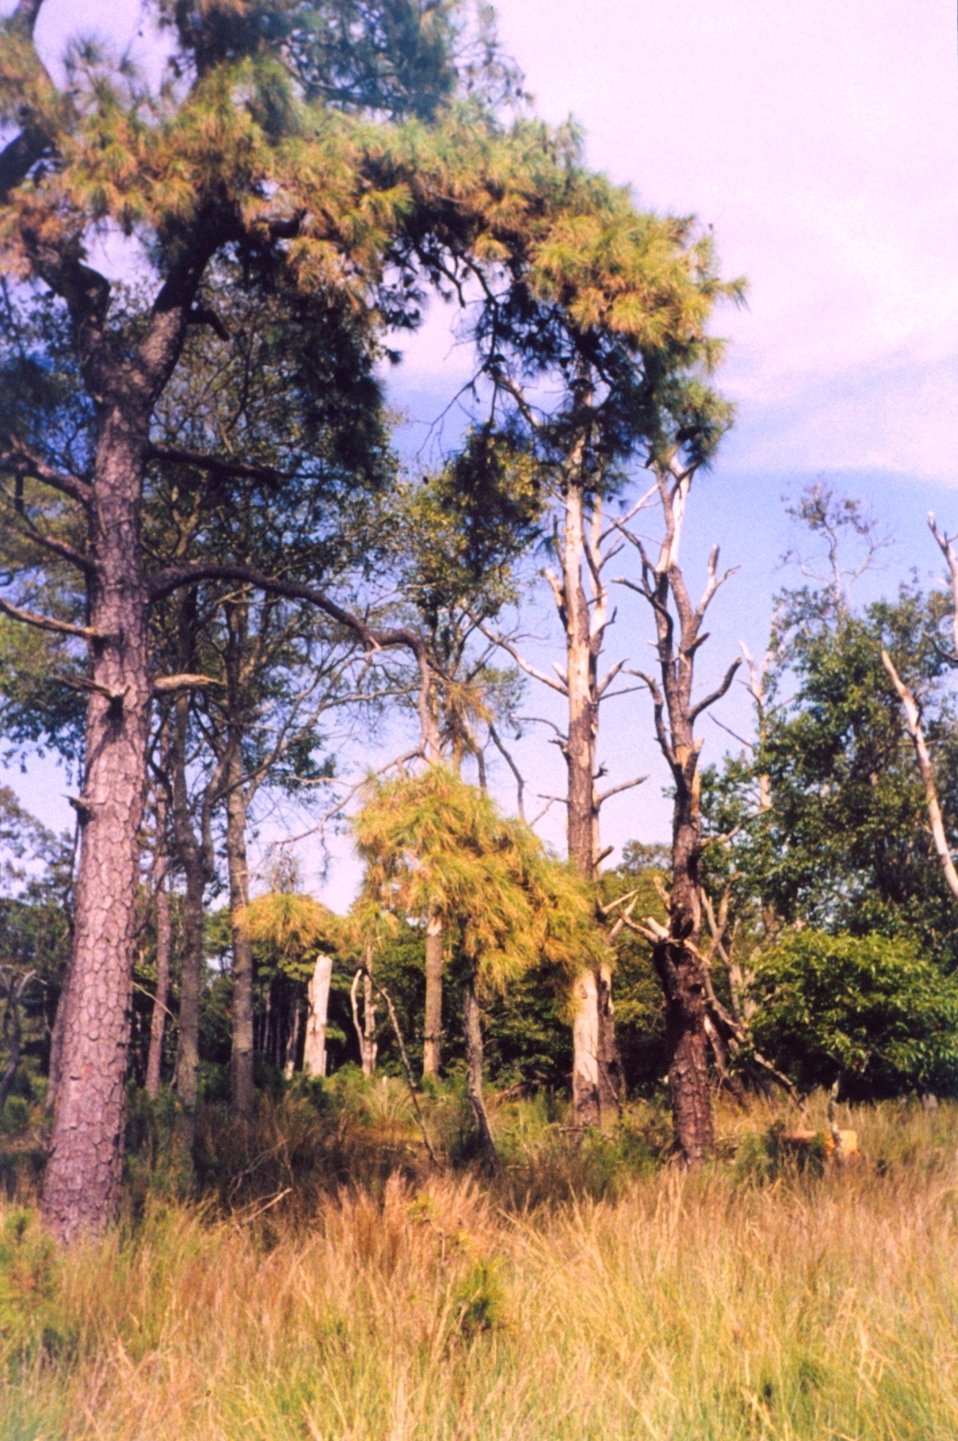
Pine barren.